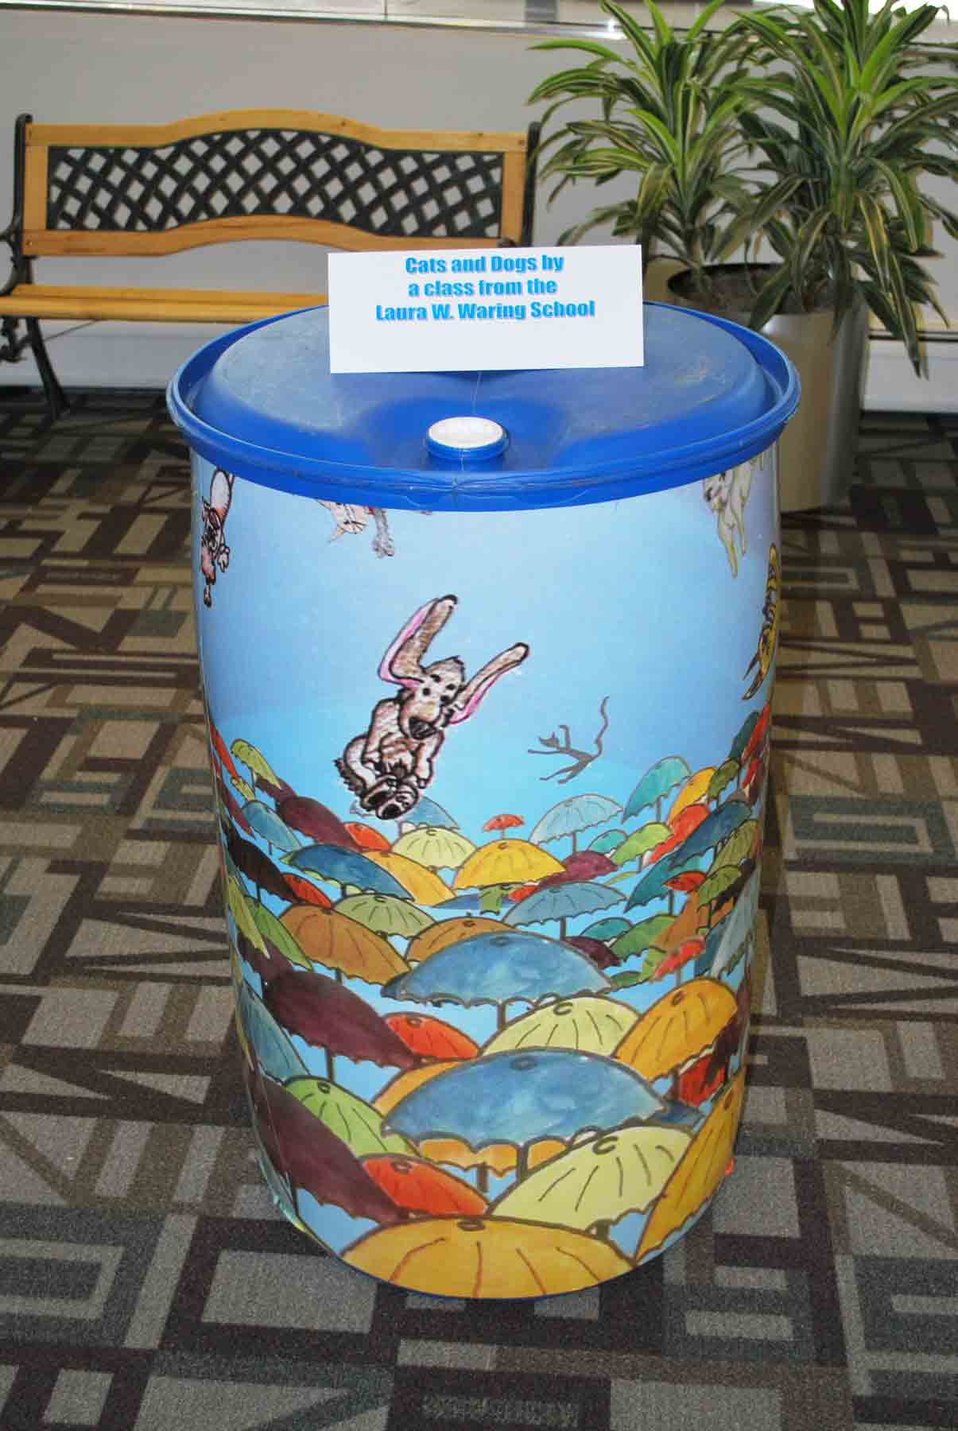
Raining Cats and Dogs - 'The Art and Science of Rain Barrels'

“Cats and Dogs” by students from the Laura W. Waring School. On display in the Public Information Center at EPA Region 3, Philadelphia, PA until September 20, 2013.